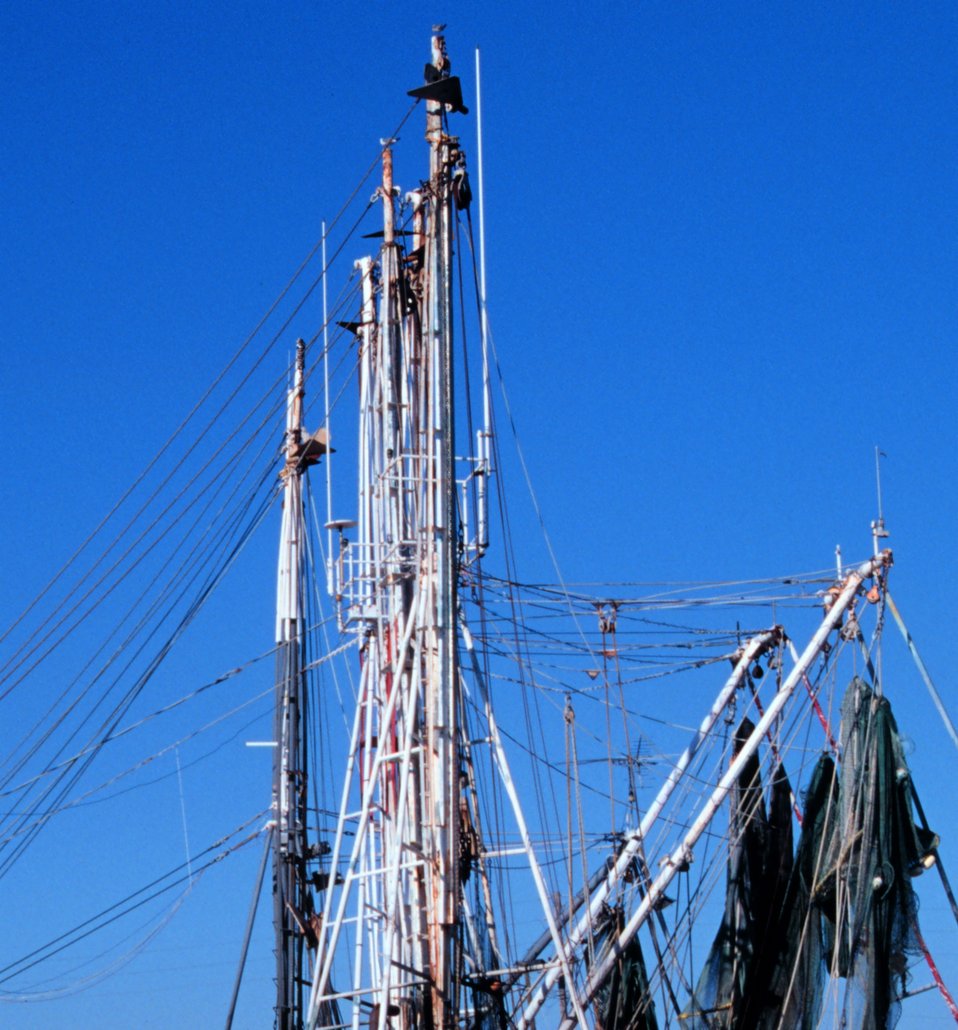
Masts and booms of shrimp boat with nets drying.